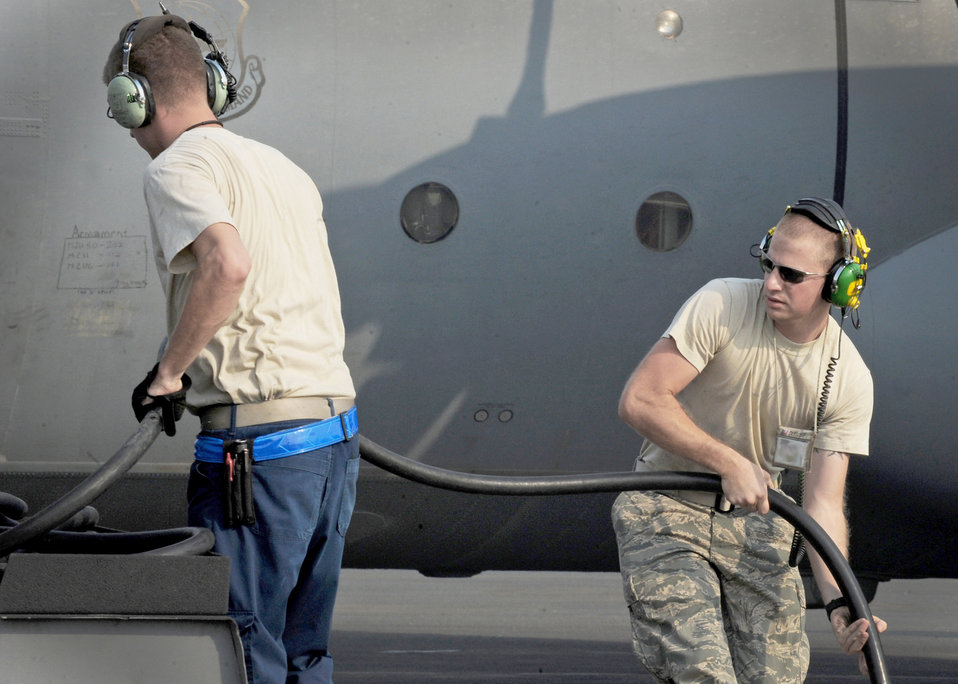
C-130E electronic attack maintenance

Senior Airman Dustin Gillespie (left) and Staff Sgt. Anthony Anderson stow an aircraft power cord in preparation for the launch of a C-130E Hercules Aug. 11, 2010, at an air base in Southwest Asia. Airman Gillespie is a crew chief and Sergeant Anderson is a propulsion craftsman with the 386th Expeditionary Aircraft Maintenance Squadron.